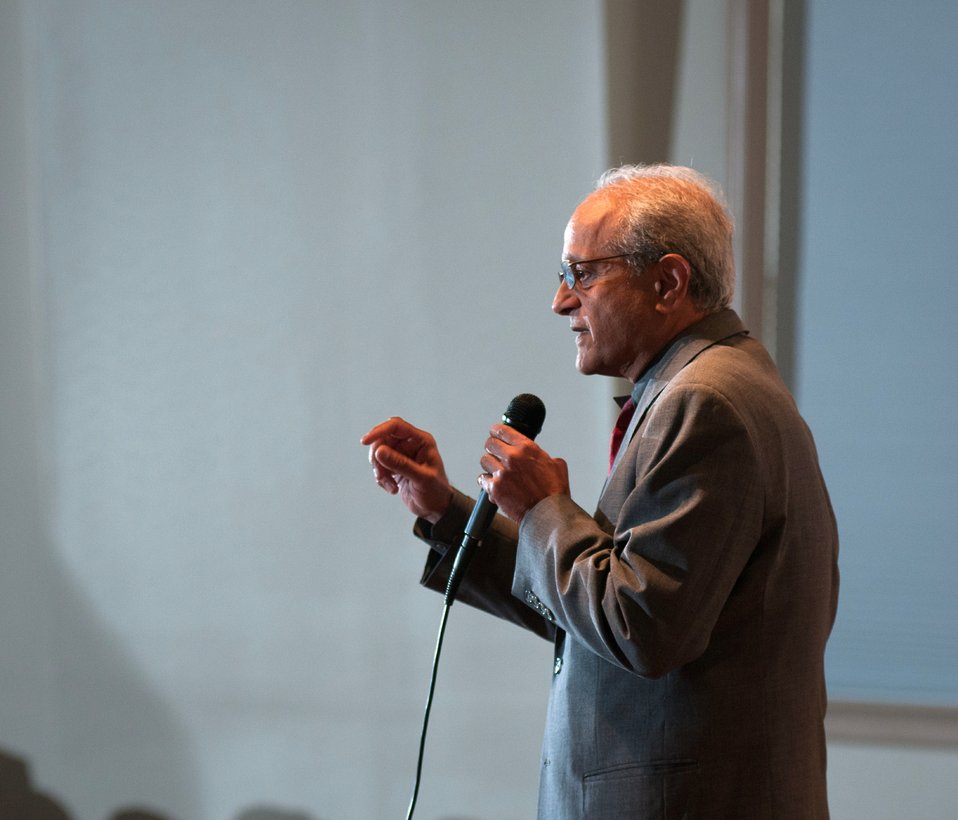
U.S. Department of Agriculture (USDA National Institute of Food and Agriculture Director Dr. Sonny Ramaswamy opened his address about to approximately 300 4-H youth members of the 2013 National 4-H Conference, with a challenge question: “What is the most daunting challenge facing humanity?” The resulting address lead to information about educational opportunities. He closed with a quote from philosopher Confucius: “Find a job you love and you will never have to work again.” on Monday, April 8, 2013 in Chevy Chase, MD. The youth delegates are in grades 10-12 (15-19 years old). The purpose of the conference is to 1) engage 4-H youth in personal development experiences that will increase knowledge, resources, and skills; 2) discuss topics affecting youth and 4-H programming nationwide; and 3) empower and mobilize 4-H youth to create positive social change in their communities in a meaningful and genuine way. The conference also reinforces the rich history of 4-H and its valuable tie to USDA, Cooperative Extension and the Land-Grant University System.